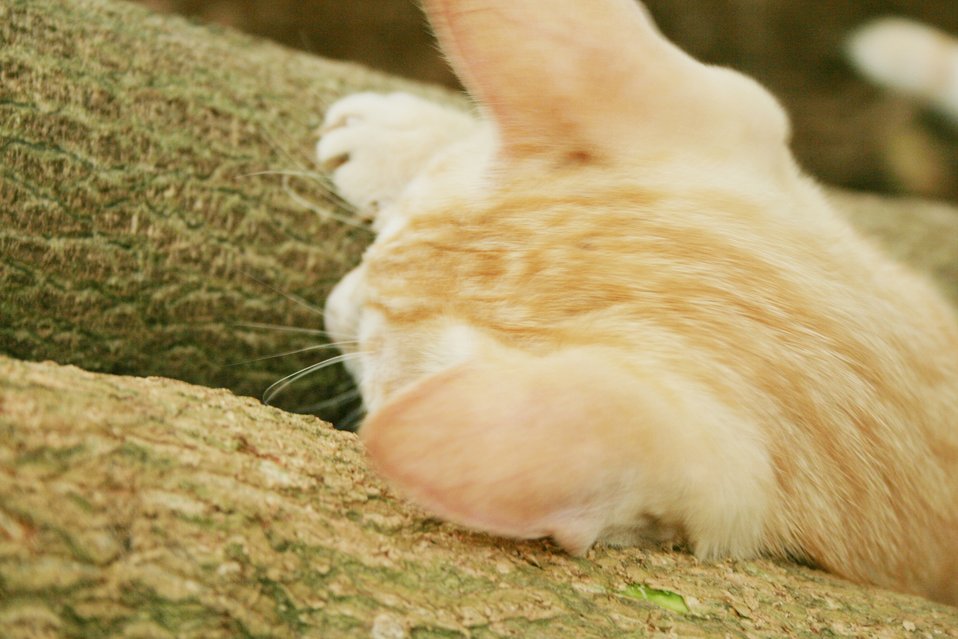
This work is dedicated to Public Domain